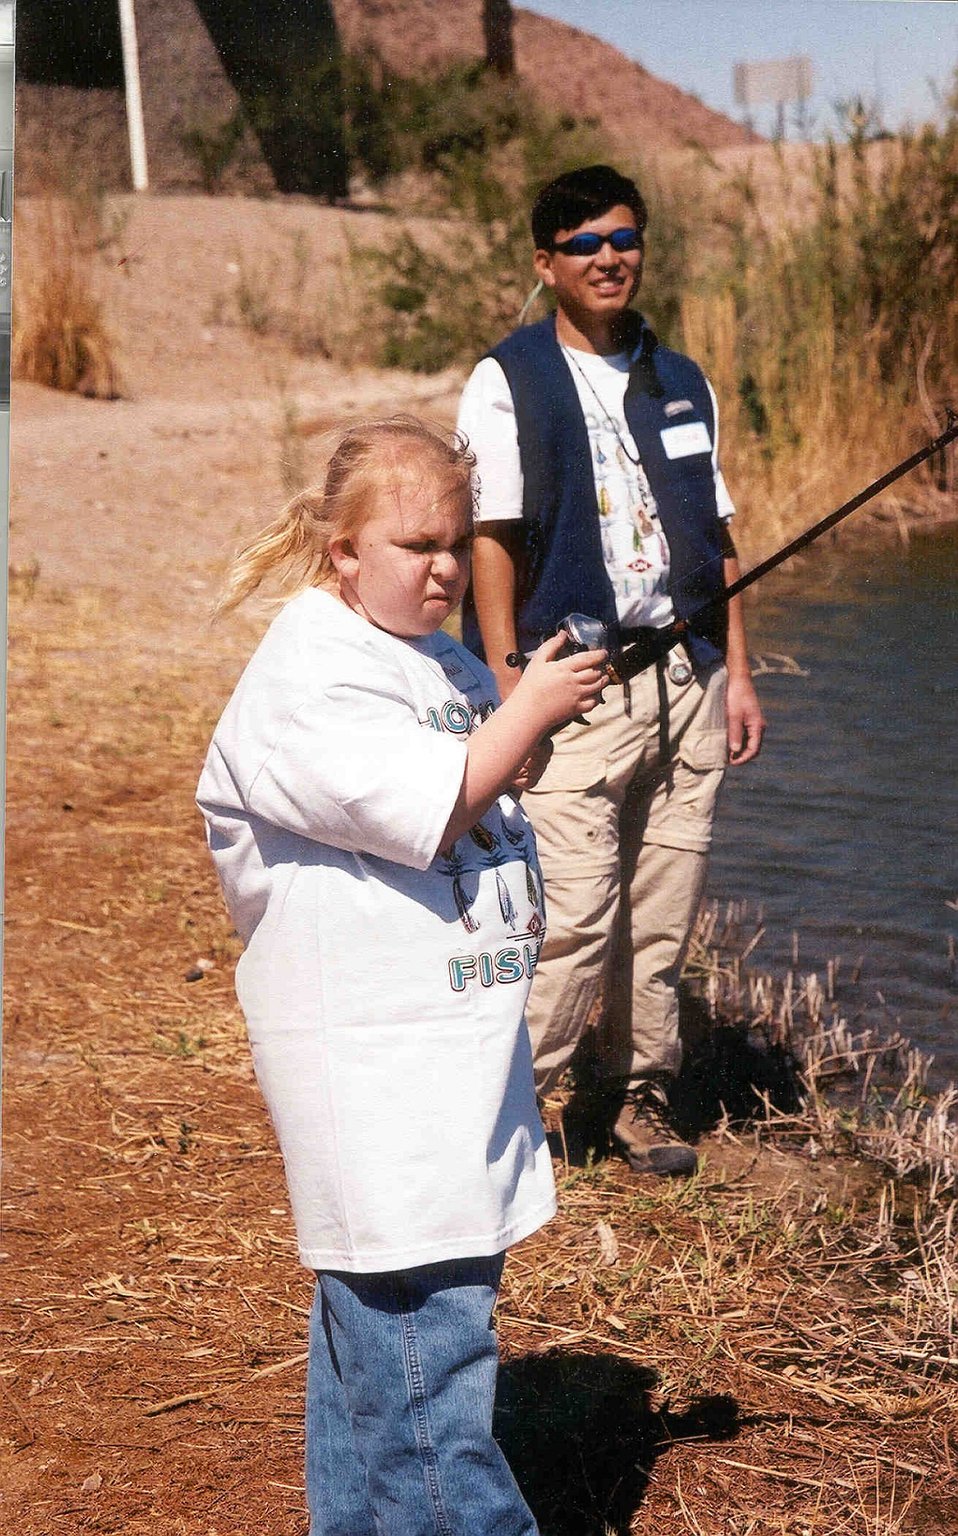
Mentally and physically challenged young people enjoying fishing and boating in celebration of National Fishing and Boating Week.